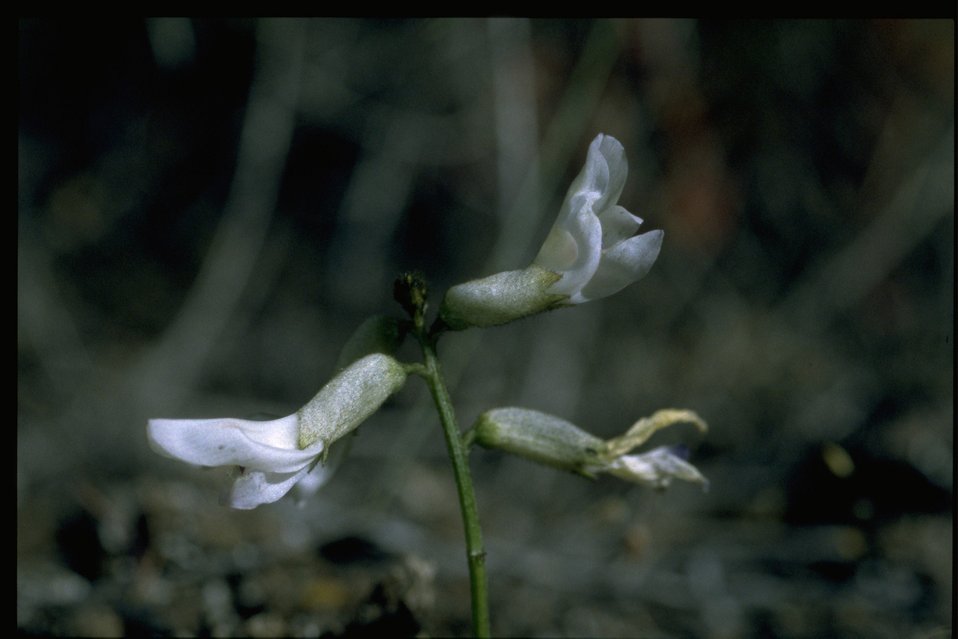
Closeup shot of Idaho milkvetch (Astragalus conjunctus).